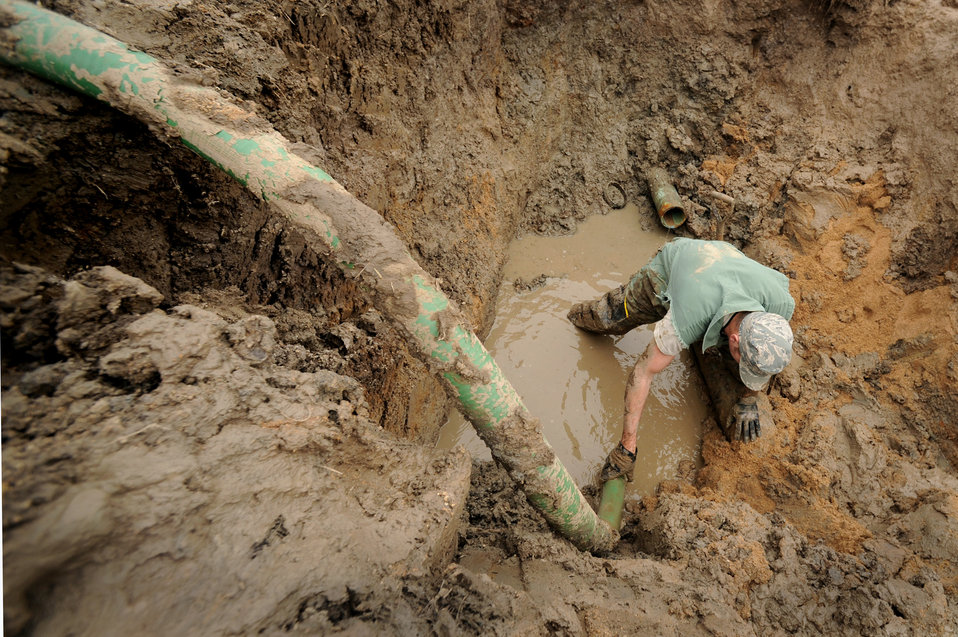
Maintenance specialists

Senior Airman Sean O'Connor guides a hose to drain standing water from a ditch, gaining access to a broken water main March 7, 2011, at Whiteman Air Force Base, Mo. Airman O'Connor is a maintenance specialist assigned to the 509th Civil Engineer Squadron.